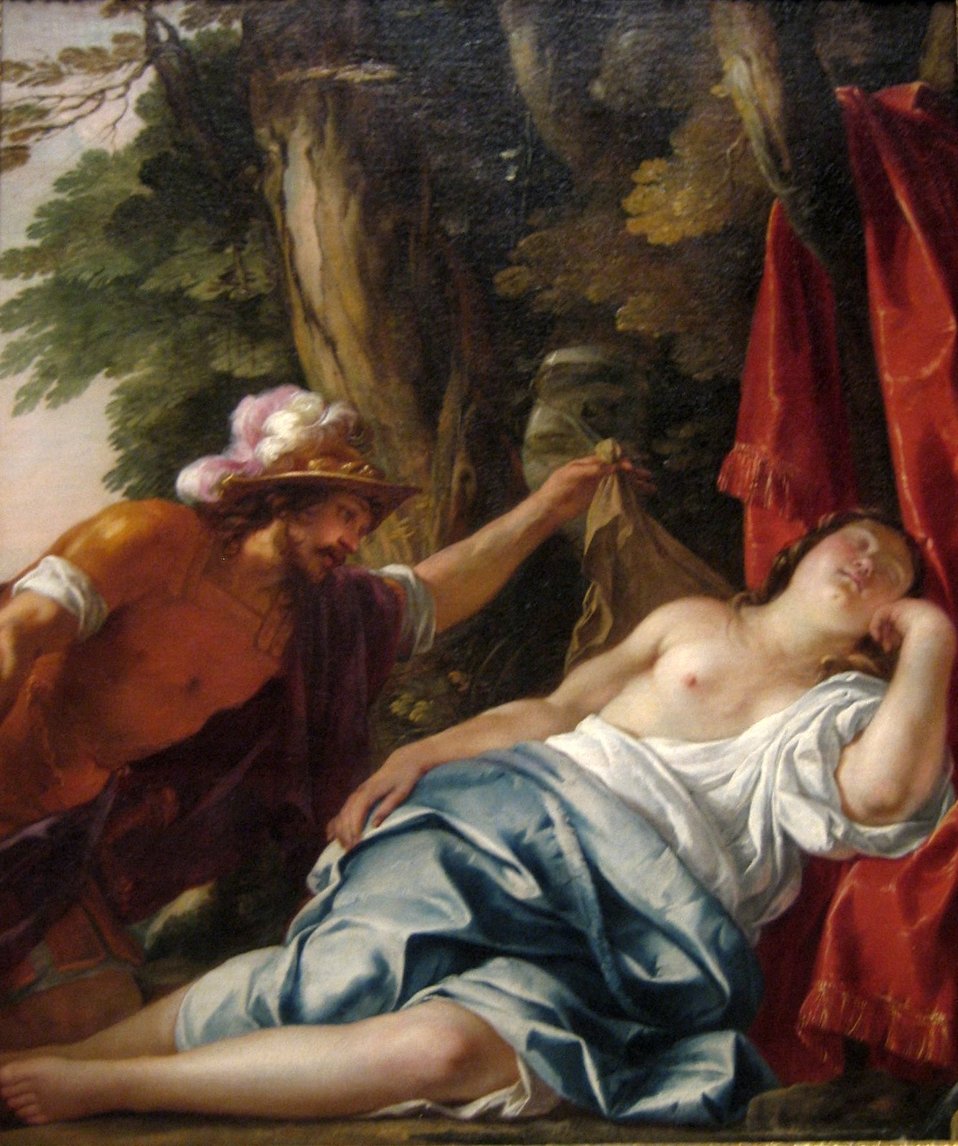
'Mars and the Vestal Virgin', oil on canvas painting by Jacques Blanchard, ca. 1630, Art Gallery of New South Wales